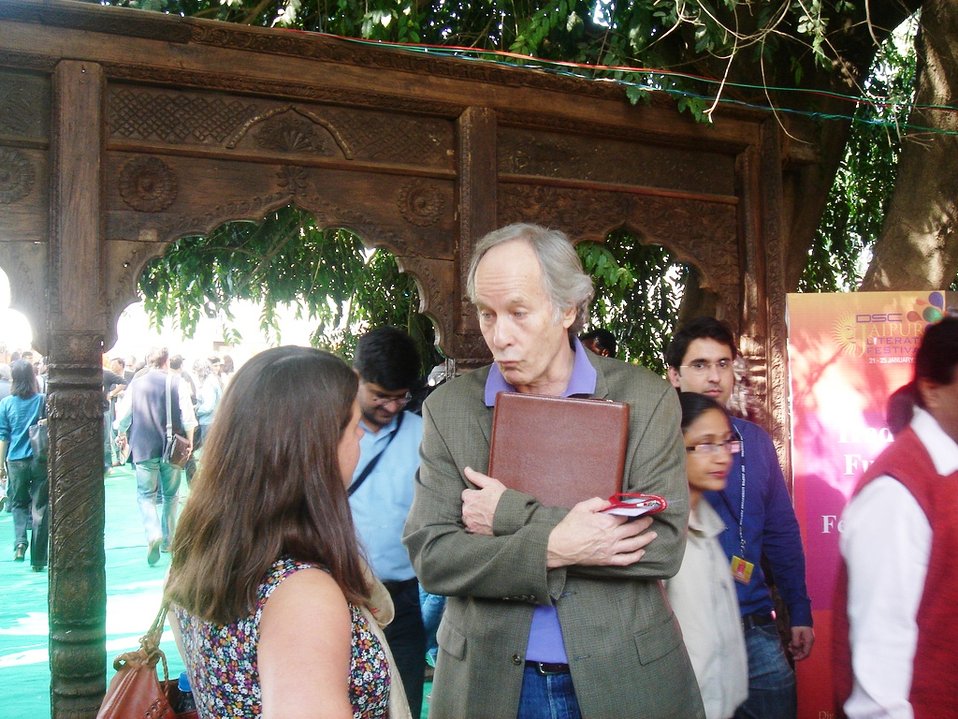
Pulitzer Prize-Winning Novelist Diaz Greets Fans

Pulitzer Prize-winning novelist Junot Diaz greets fans at the Jaipur Literature Festival 2011 in Jaipur, India, in January 2011.